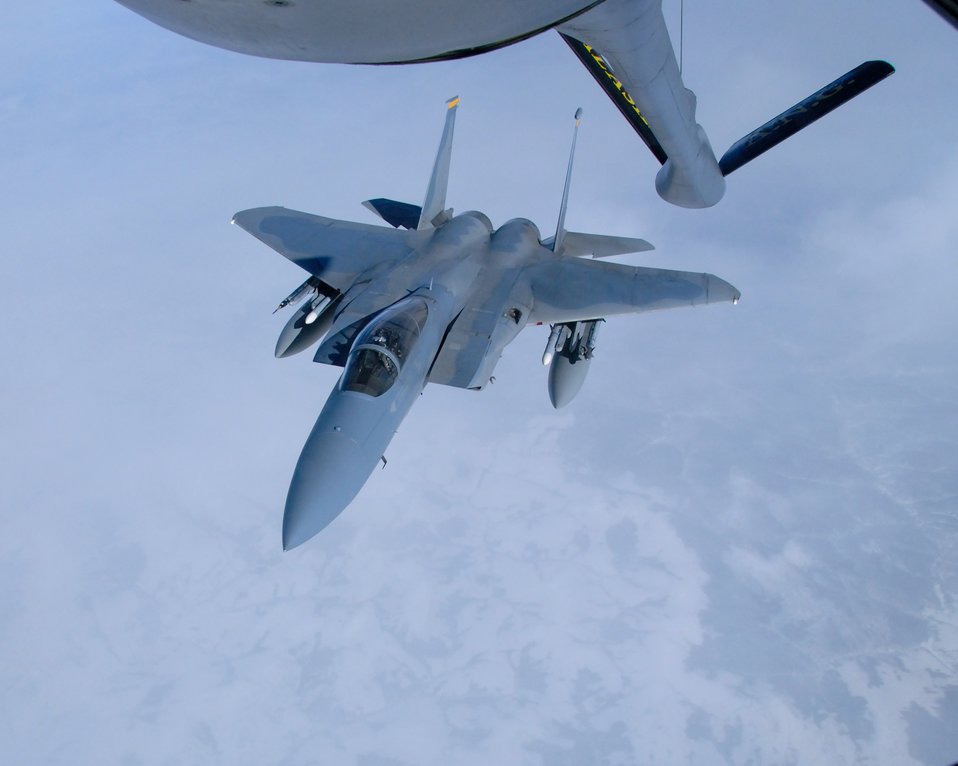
Gas at 20,000 feet

A 12th Fighter Squadron F-15 Eagle from Elmendorf Air Force Base, Alaska, prepares to get into position to be refueled by a KC-135 Stratotanker March 26 over the Pacific Alaska Range Complex. The KC-135 enhances the Air Force's capability to accomplish its primary missions of global reach and global power. The KC-135 is from the 168th Air Refueling Squadron at Eielson AFB, Alaska.